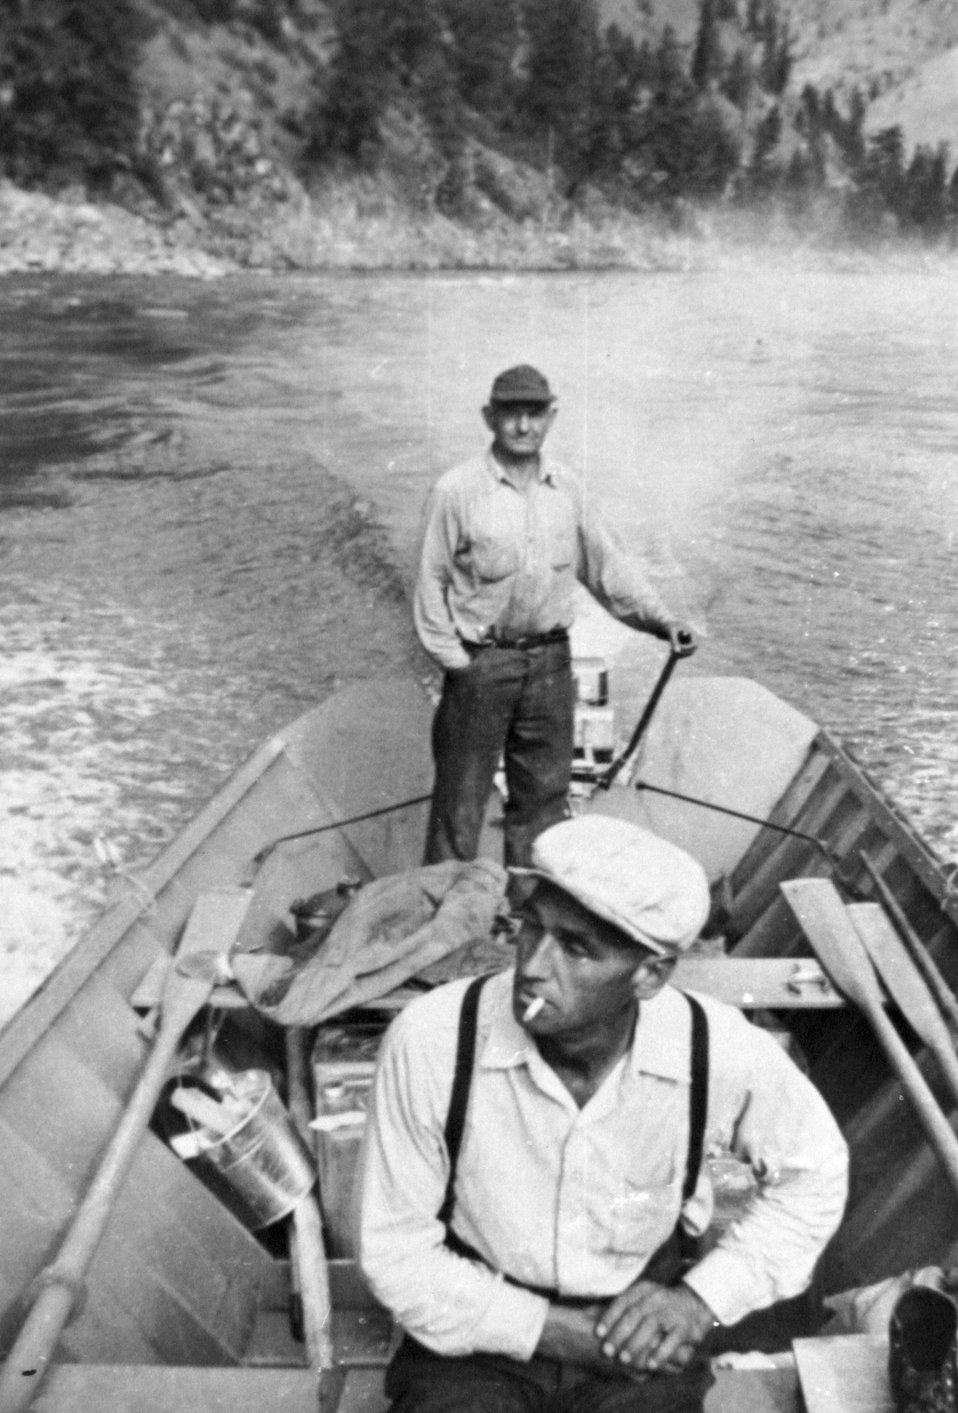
Glen Wooldridge steers the boat on the Salmon river. Ruell Hawkins in front is the son of Angeline Billings Hawkins.